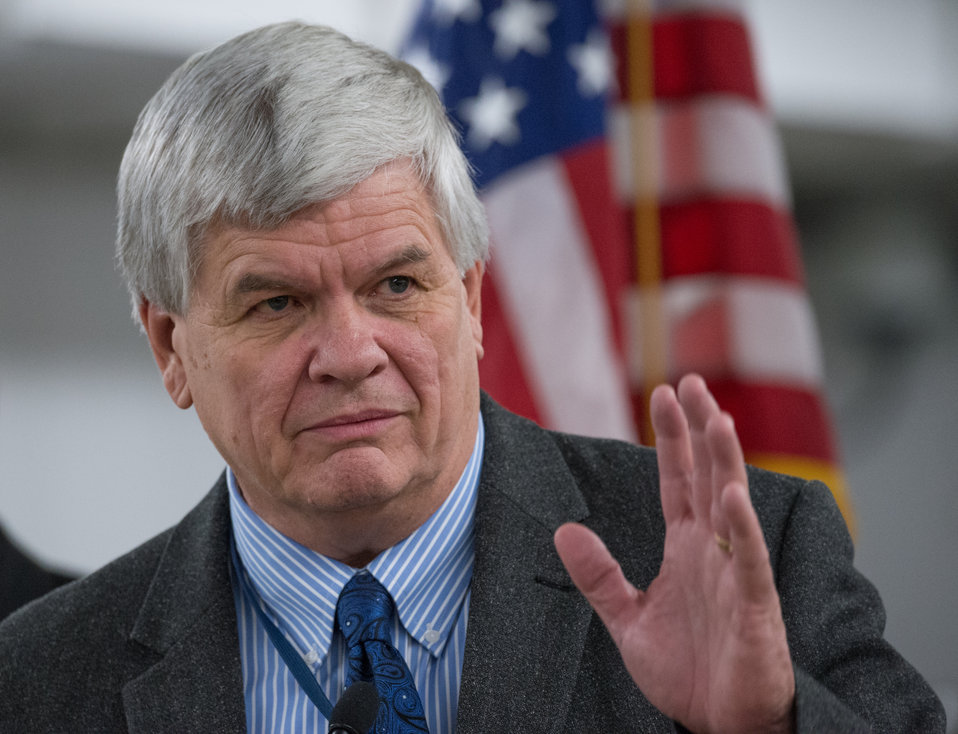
U.S. Department of Agriculture (USDA) Agriculture Research Service (ARS) Northern Plains Area Director Dr. Larry Chandler introduces Agriculture Secretary Tom Vilsack to staff and media at USDA’s ARS National Center for Genetic Resources Preservation (NCGRP) in Ft. Collins, CO on Wednesday, Nov. 6, 2013. NCGRP is the largest agricultural gene bank facility in the U.S. The NCGRP staff conducts groundbreaking research to develop more efficient and effective means for preserving plant and animal germplasm, and for better understanding the genetic structure of these invaluable materials. The research findings, preservation techniques, and specialized technology developed by the NCGRP have been adopted by gene banks around the world: many international scientists travel to the NCGRP for research and training.